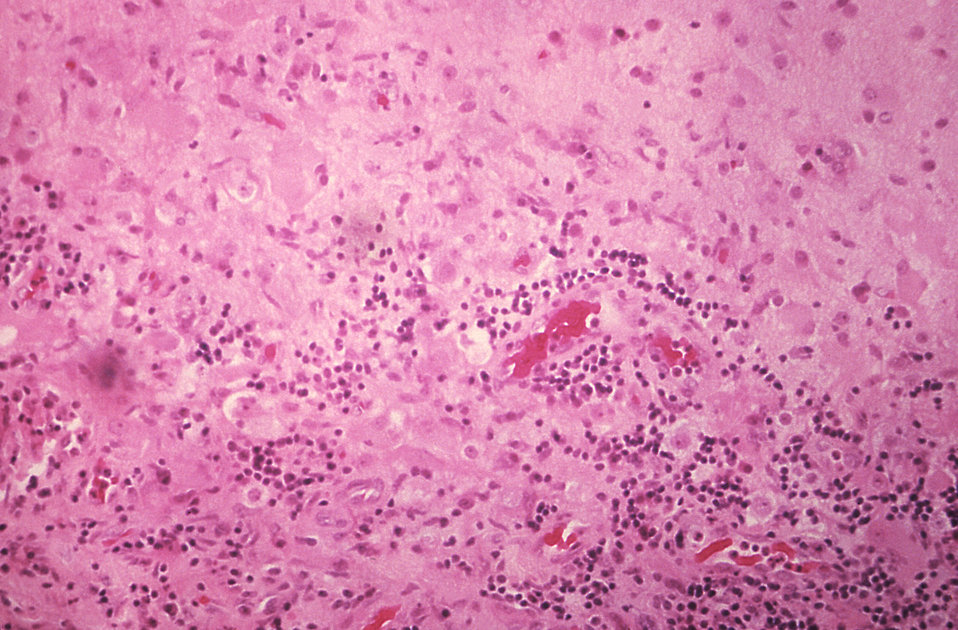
Under a relatively low magnification of 50x, this hematoxylin-eosin (H&E) stained brain tissue specimen, extracted from the occipital cortical region adjacent to an actinomycotic abscess, revealed some of the histopathologic changes associated with a rare case of disseminated actinomycosis.